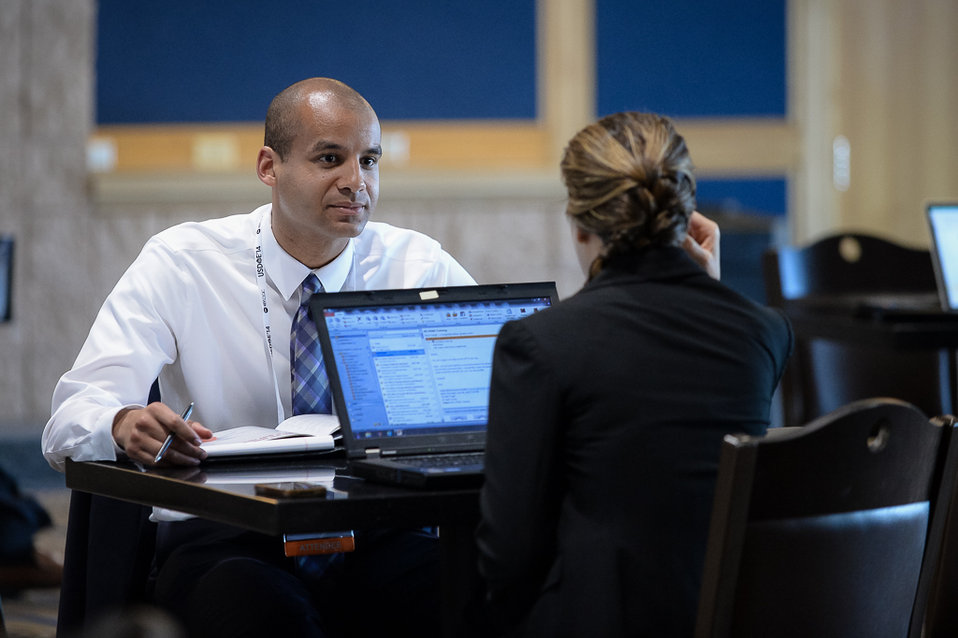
OSDBU Conf 8